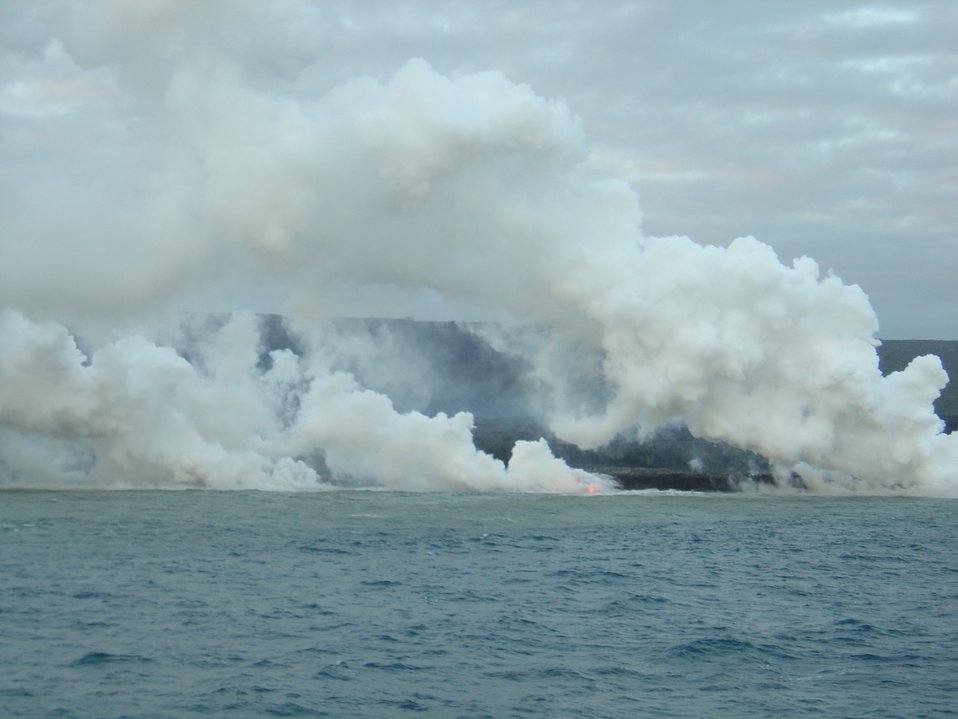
Lava flow entering the sea on SE coast of Hawaii.